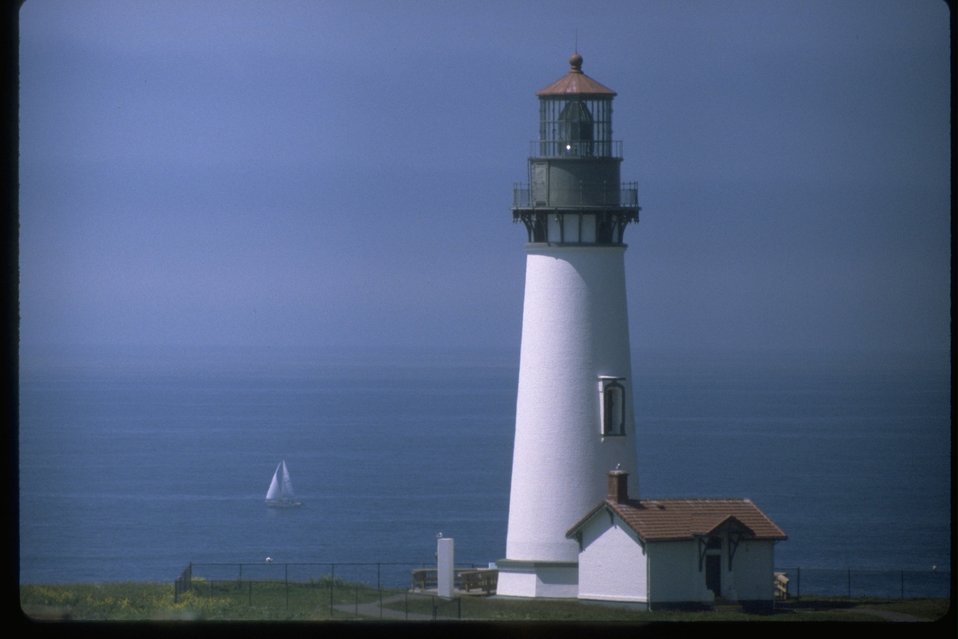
Horizontal shot of Yaquina Head lighthouse with a sailboat off shore.